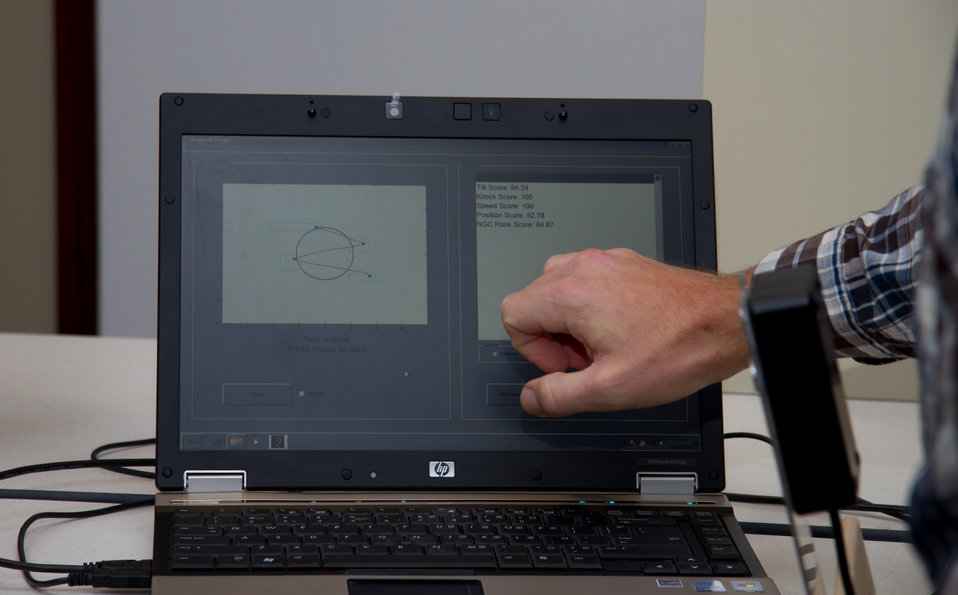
Jason Jordan, Agricultural Engineer in Grain Inspection, Packers and Stockyards Administration (GIPSA) Inspection Instrumentation Branch, explains the test weight trainer software and hardware that GIPSA has developed to help grain inspectors achieve consistency in determining the density of grain samples at the Board of Appeals, in Kansas City, MO, on Wednesday, Oct. 23, 2013.